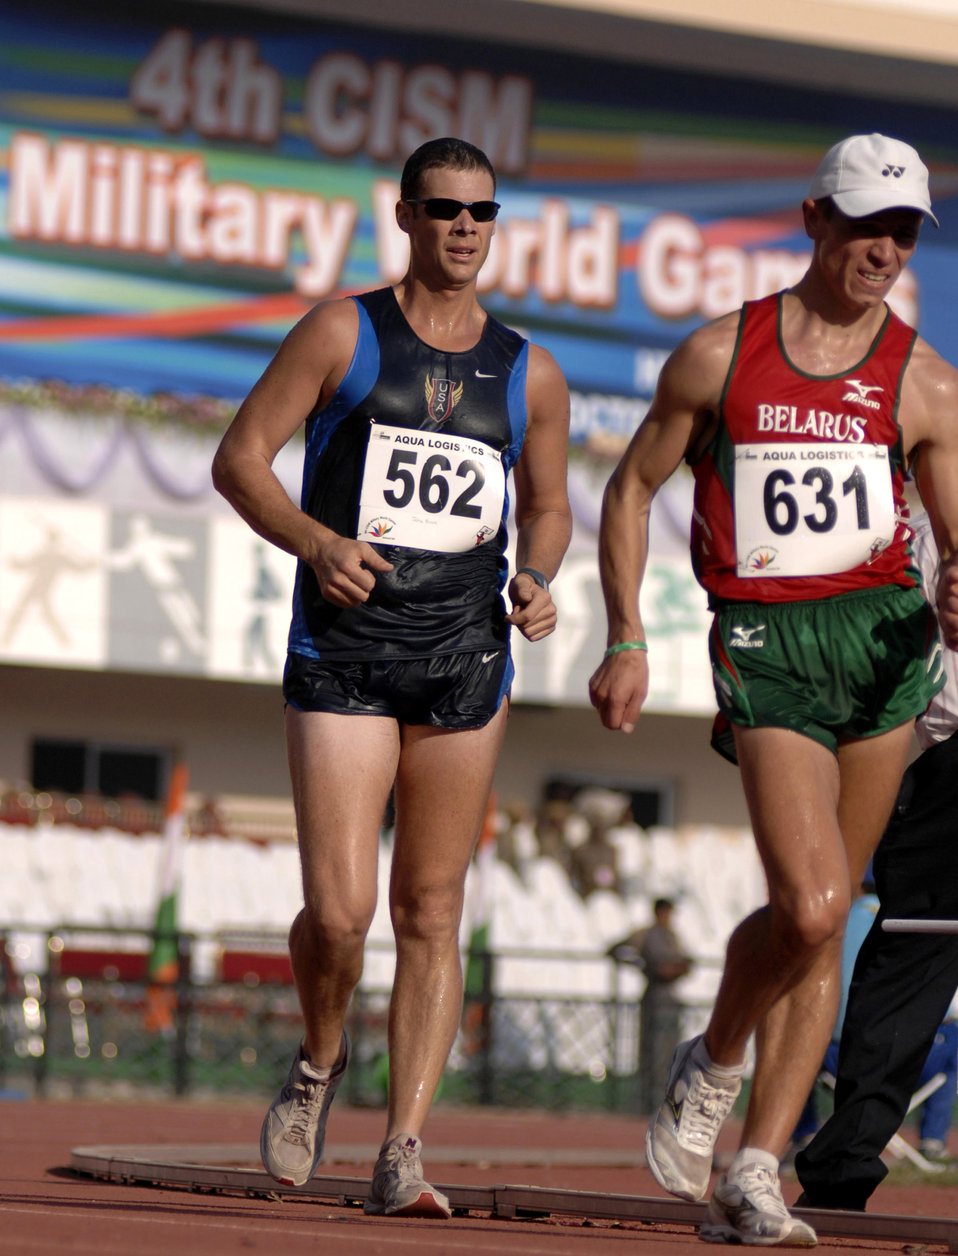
Americans compete in Military World Games

Army Sgt. John Nunn (left) speed walks during the Military World Games competition Oct. 15 in Hyderabad, India. He placed ninth in the event. The Conseil Internationale du Sport Militaire's Military World Games event is the largest international military Olympic-style event in the world. In this year's fourth edition of the Games, 103 countries and more than 5,000 athletes are scheduled to compete Oct. 14 through 21 in boxing, diving, soccer, handball, judo, military pentathlon, parachuting, sailing, shooting, swimming, volleyball and track and field. The purpose of the Military World Games is to promote friendship through sport.